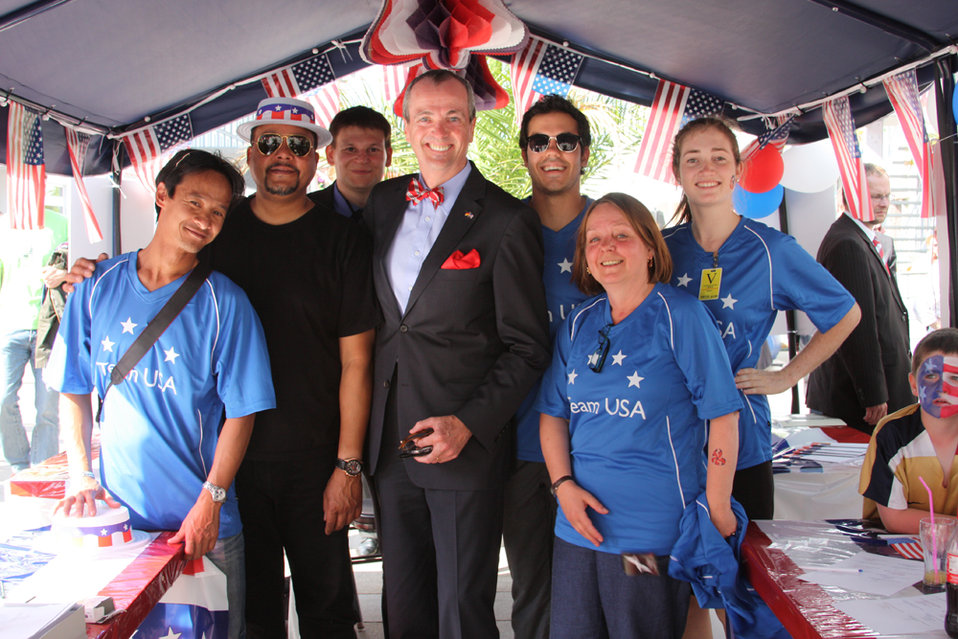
Ambassador Murphy and Staff Members of U.S. Consulate General Hamburg Pose at the Consulate Booth

U.S. Ambassador to Germany Philip D. Murphy and staff members of U.S. Consulate General Hamburg pose at the Consulate Booth in Wolfsburg, Germany, on July 6, 2011.